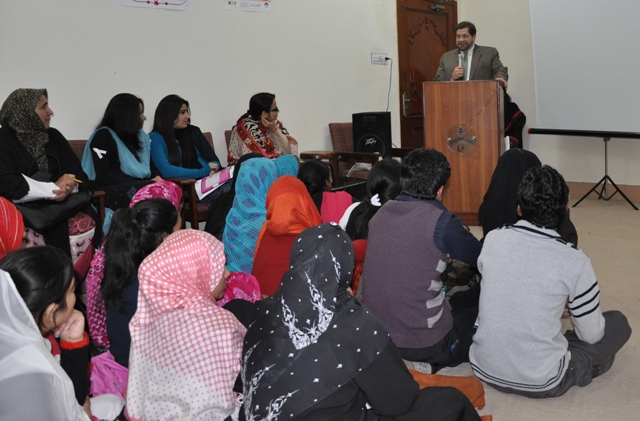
Mission Director for Punjab Jeffrey Bakken giving remarks at the Gender Studies Department of Punjab University.